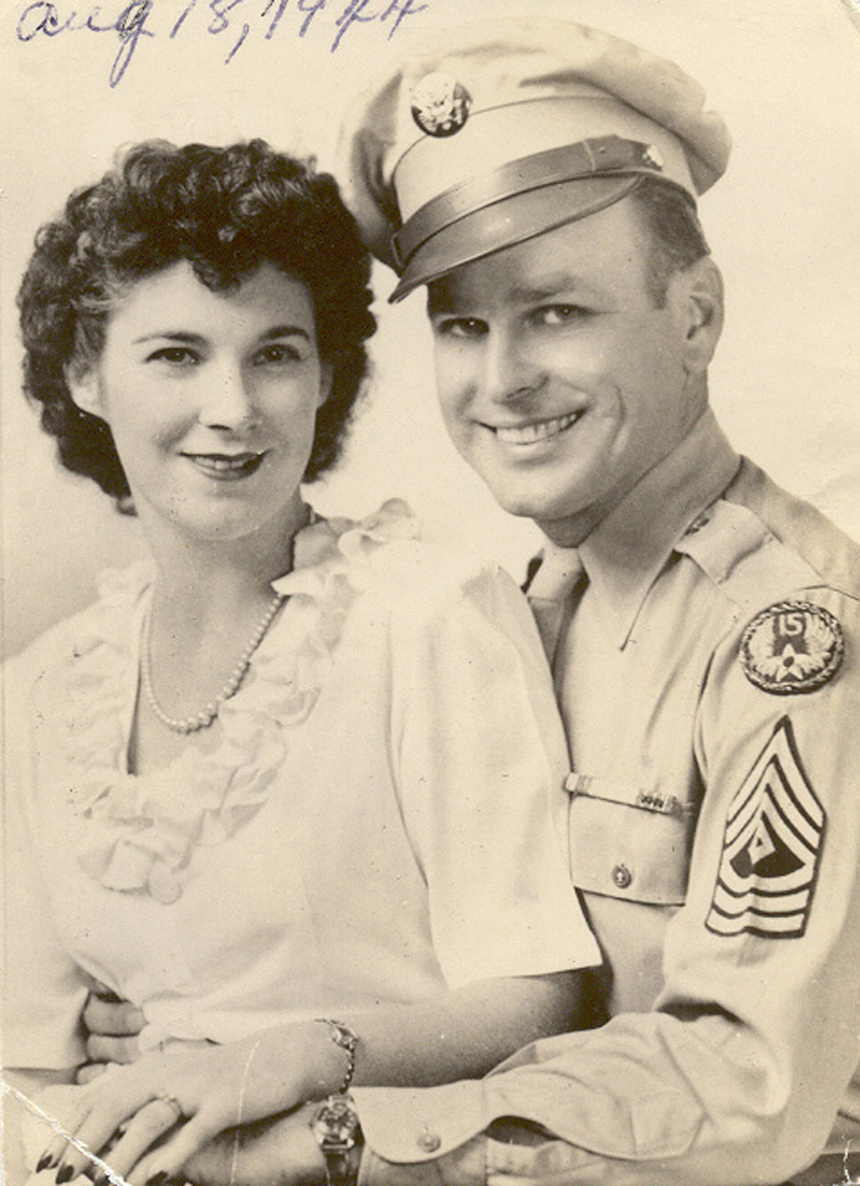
Wedding memories

Dot and Jack Hite on their wedding day in 1944.